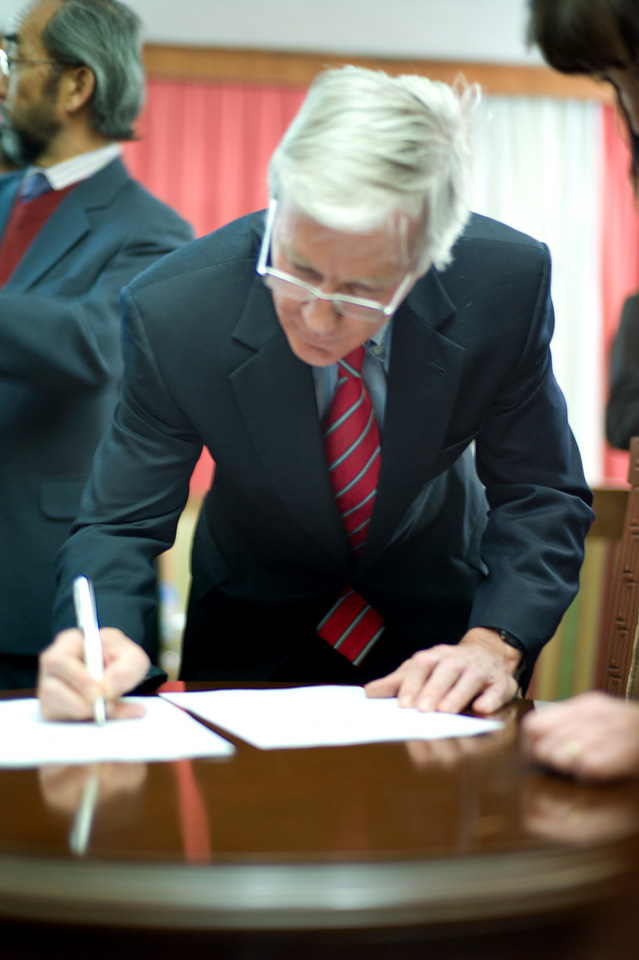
Ambassador Crocker signing 1